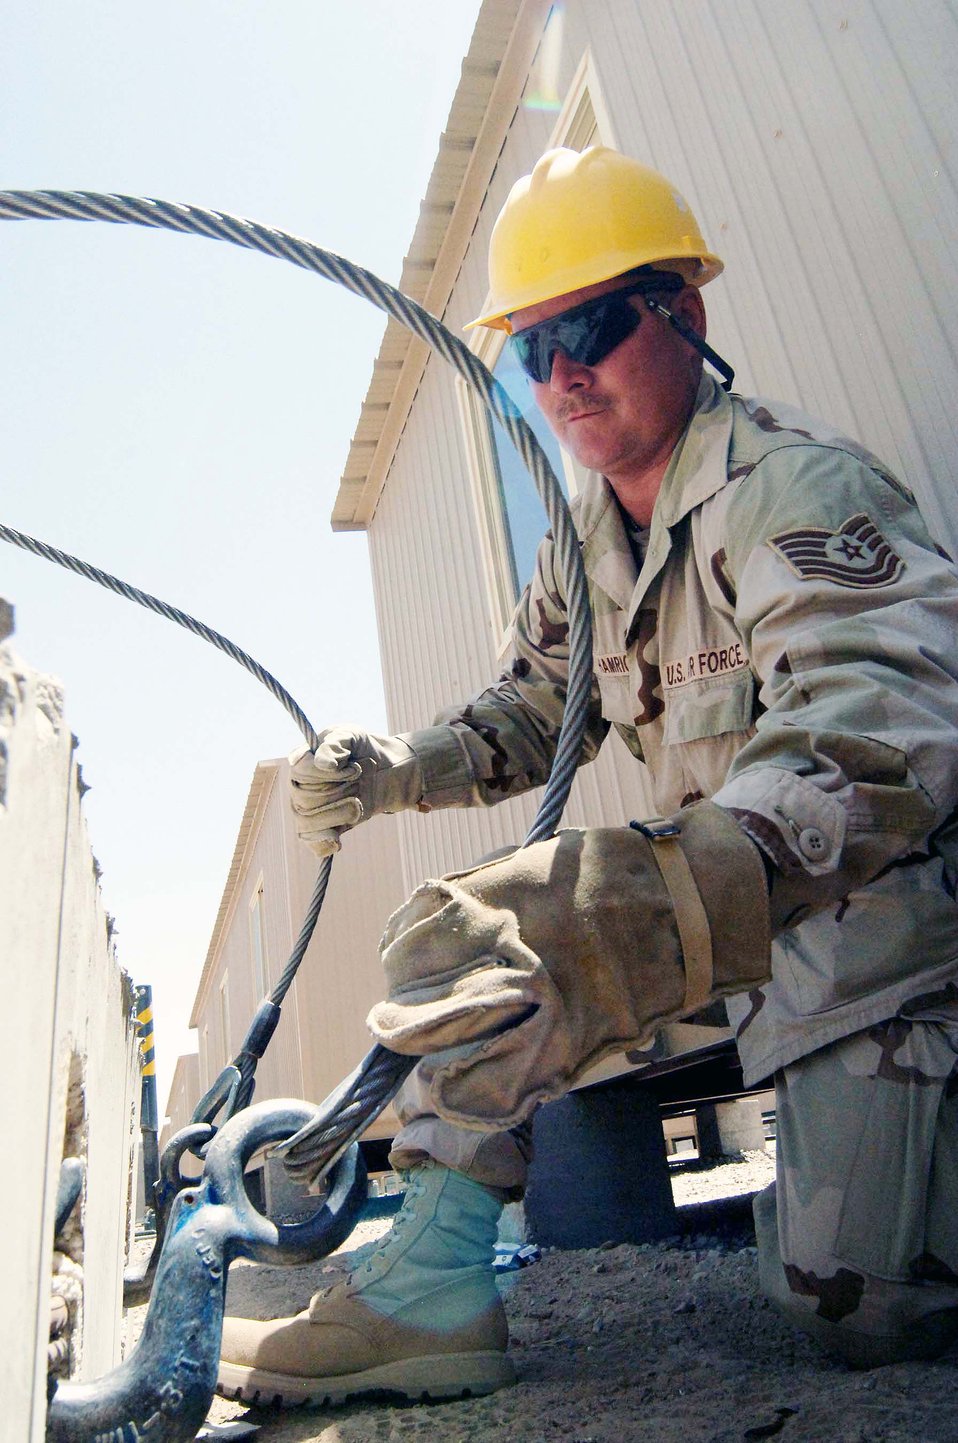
Concrete barriers save lives

Tech. Sgt. Scott Hamrick hooks up cables from a crane to a concrete T barrier that is ready to be moved into position June 27 at Sather Air Base, Iraq. The barriers are part of a concrete wall being pieced together for protection against incoming rockets and mortars. Sergeant Hamrick is a pavement specialist with the 447th Expeditionary Civil Engineer Squadron.